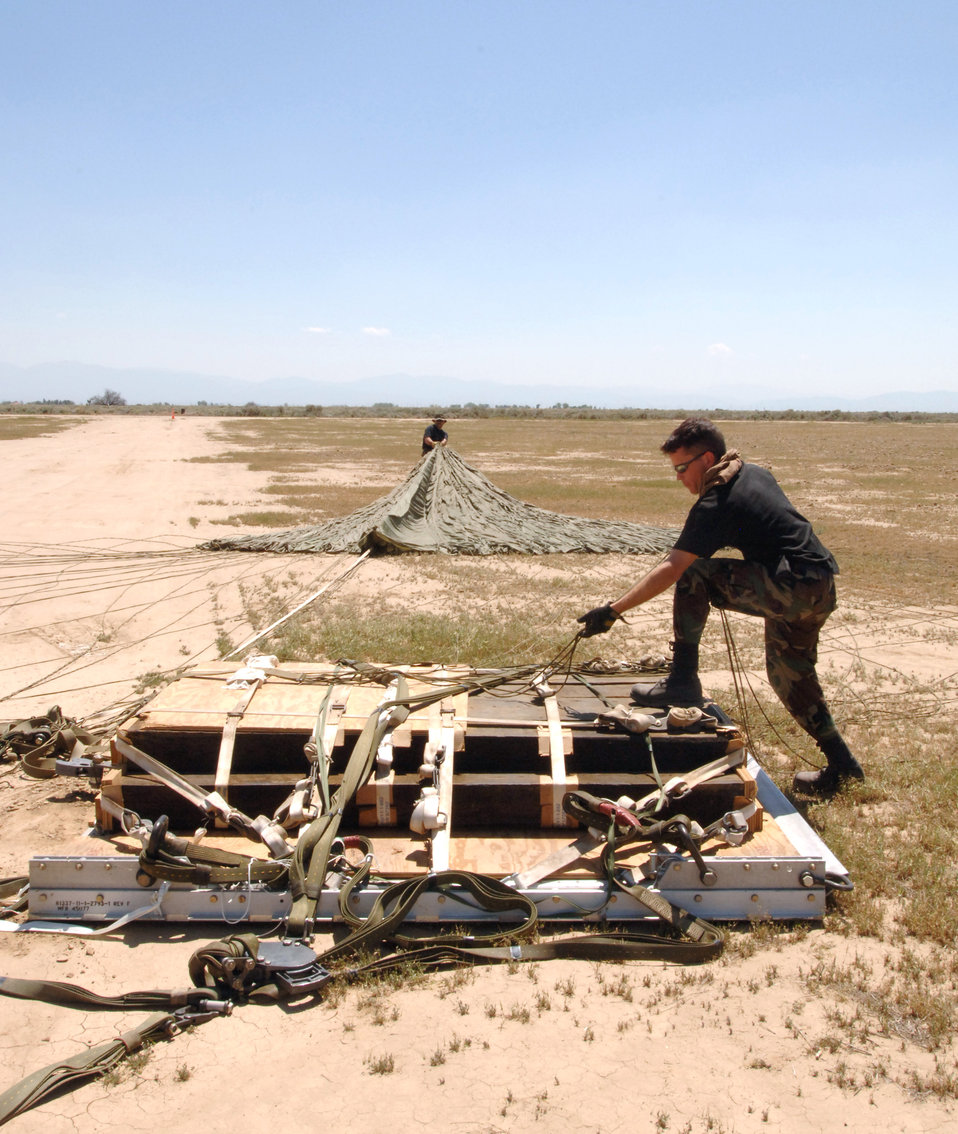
Pallet drop over California

Senior Airman Mark Richwine disconnects the parachute from a Type 5 heavy pallet after it landed at Edwards Air Force Base, Calif., on Sunday, April 30, 2006. The pallet had been dropped from a C-130J Hercules as part of a test to certify the aircraft's capability to drop this type of pallet. Guard, Reserve and active-duty aircrews from Channel Islands Air National Guard Base, Calif.; Little Rock AFB, Ark.; and Keesler AFB, Miss., participated in the certification. This was the first time the